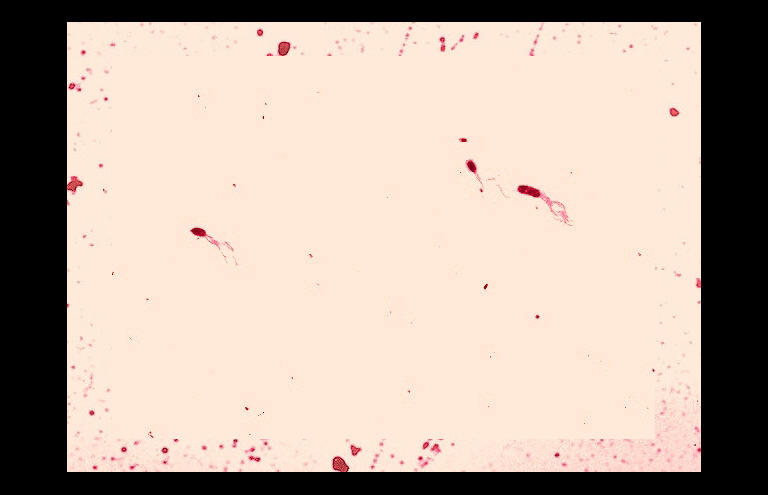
Aeromonas shigelloides. Leifson flagella stain (digitally colorized).